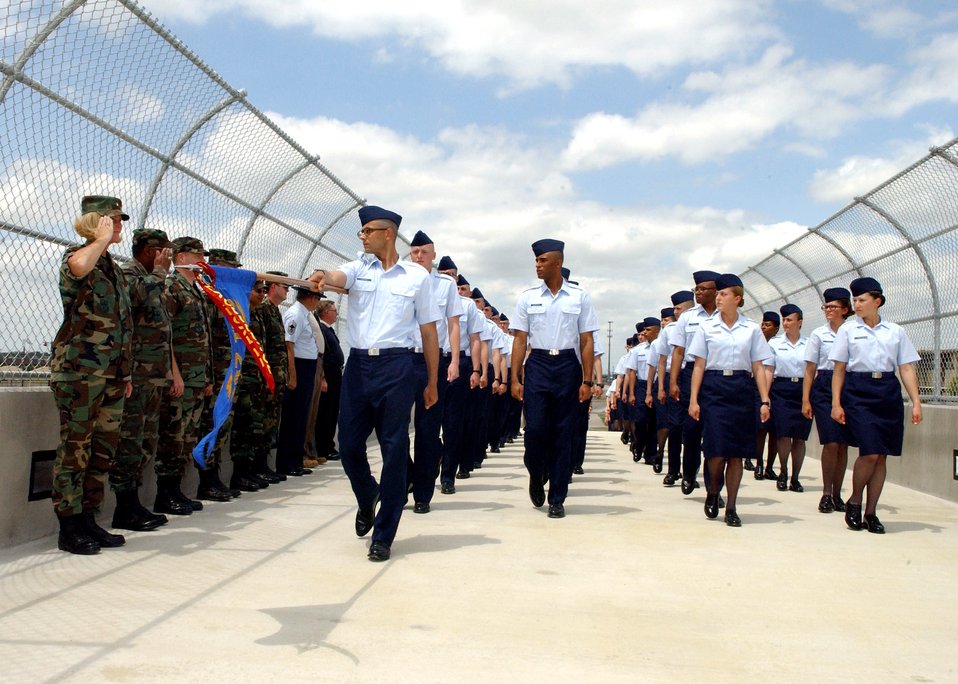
New troop crosswalk

Brig. Gen. Mary Kay Hertog salutes basic military training flights 407 and 408 of the 322nd Training Squadron as they pass in review over the new troop crosswalk at Lackland Air Force Base, Texas, on Thursday, May 25, 2006. The flights were the first to use the new bridge that will alleviate congestion and increase safety for troop movement. General Hertog is commander of the 37th Training Wing at Lackland AFB.